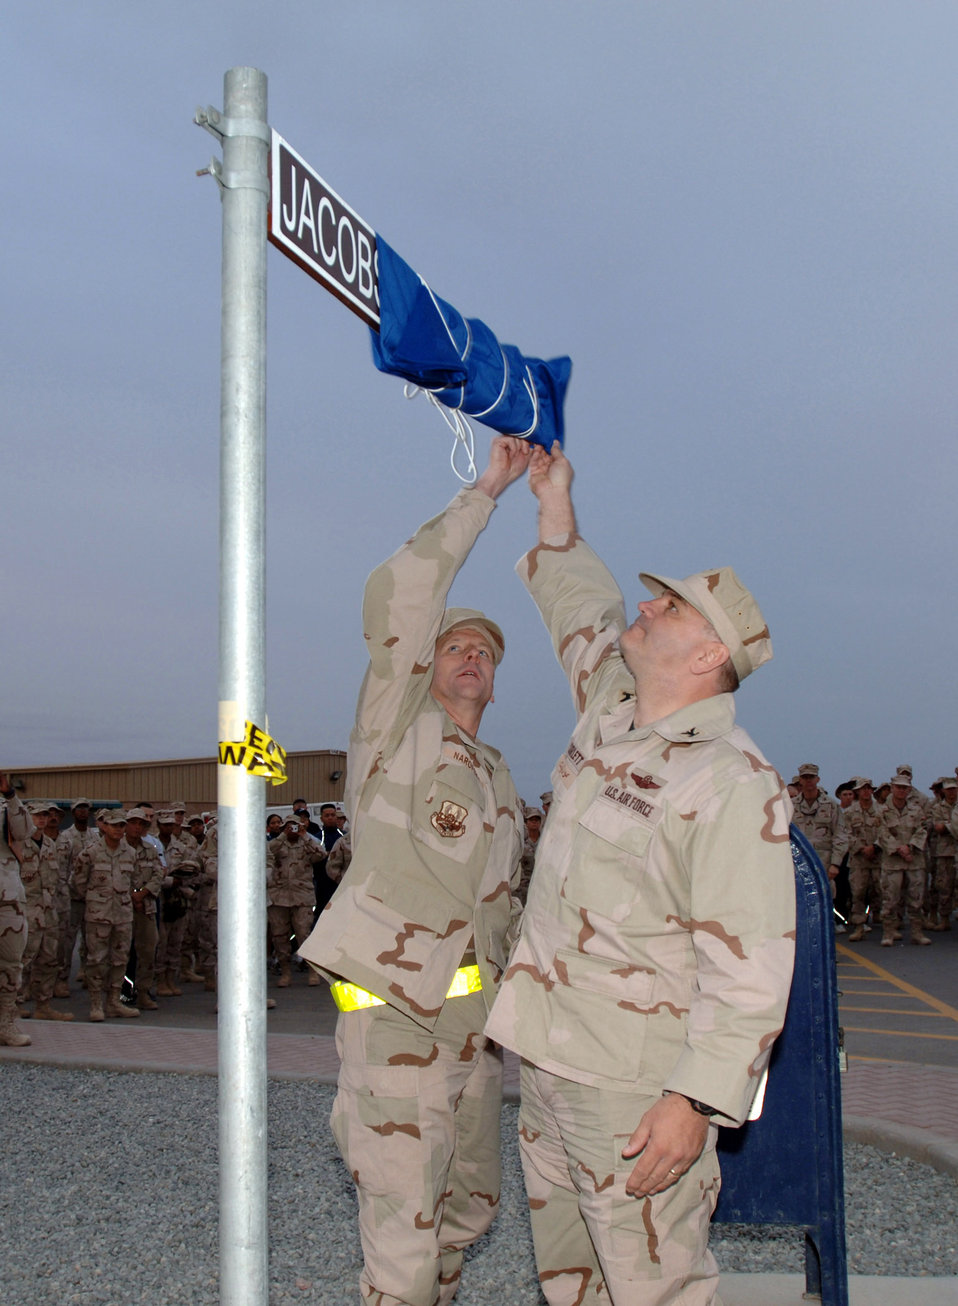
Rememberance ceremony

Chief Master Sgt. Thom Narofsky and Col. Paul Curlett dedicate a road as Jacobson Avenue at a deployed location in Southwest Asia Nov. 10. The street dedication was part of a memorial ceremony for all veterans, including Airman 1st Class Elizabeth Jacobson who was killed while on a convoy near Camp Bucca, Iraq. Her vehicle was hit by an improvised explosive device on Sept. 28, 2005. She was the first female Airman killed in the line of duty supporting Operation Iraqi Freedom. Colonel Curlett is the commander of the 386th Air Expeditionary Wing and Chief Narofsky is the command chief.